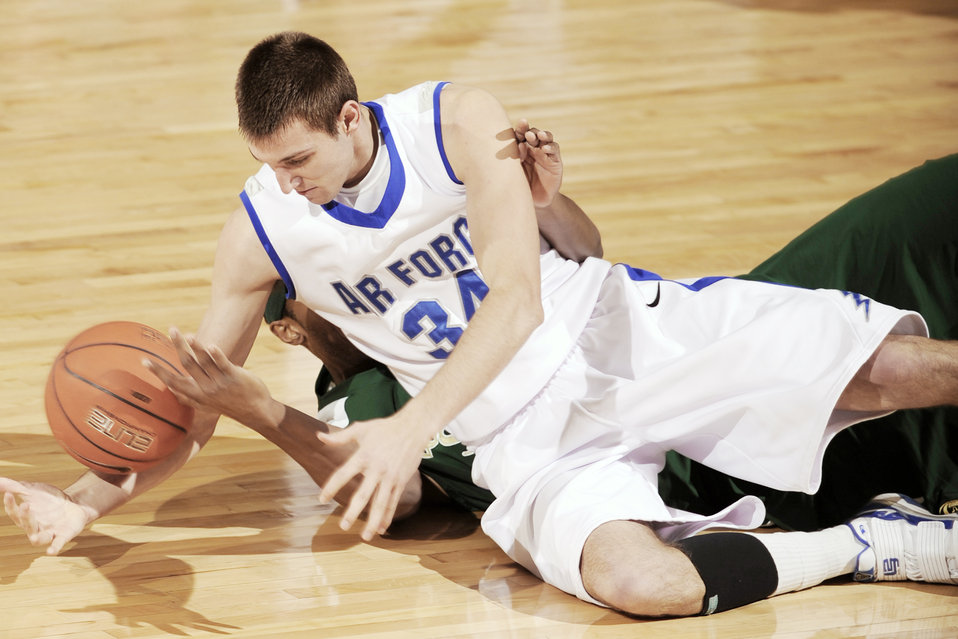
Colorado State beat Falcons

Falcon freshman Taylor Broekhuis battles for the loose ball as Colorado State beat Air Force 51-47 in front of about 1,709 people at the U.S. Air Force Academy's Clune Arena Feb 9, 2010. The Falcons are 9-14 overall and 1-9 in the Mountain West Conference.